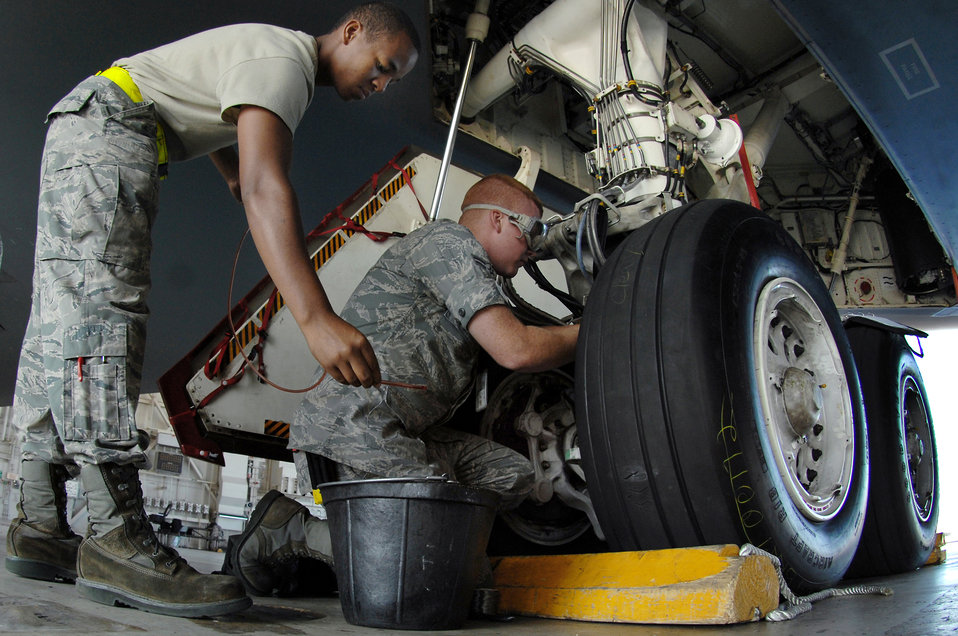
Ready for takeoff

Airmen from the 509th Aircraft Maintenance Squadron safety wires a brake bleed on a B-2 Spirit Aug. 22 at Whiteman Air Force Base, Mo. Squadron crew chiefs work around the clock to ensure the B-2 is mission ready at all times.